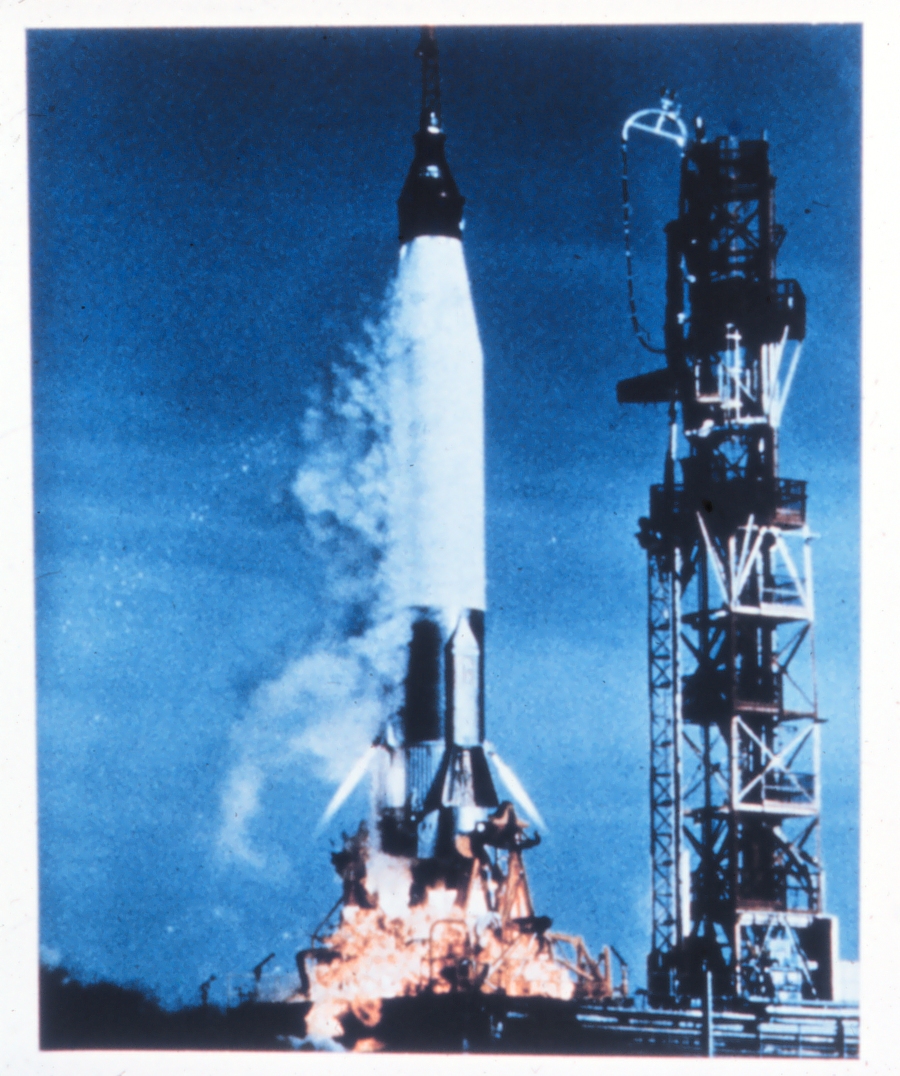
A Mercury launch. The Mercury series were manned orbiting vehicles. Many meteorological and earth resource photographs were taken by Mercury astronauts.